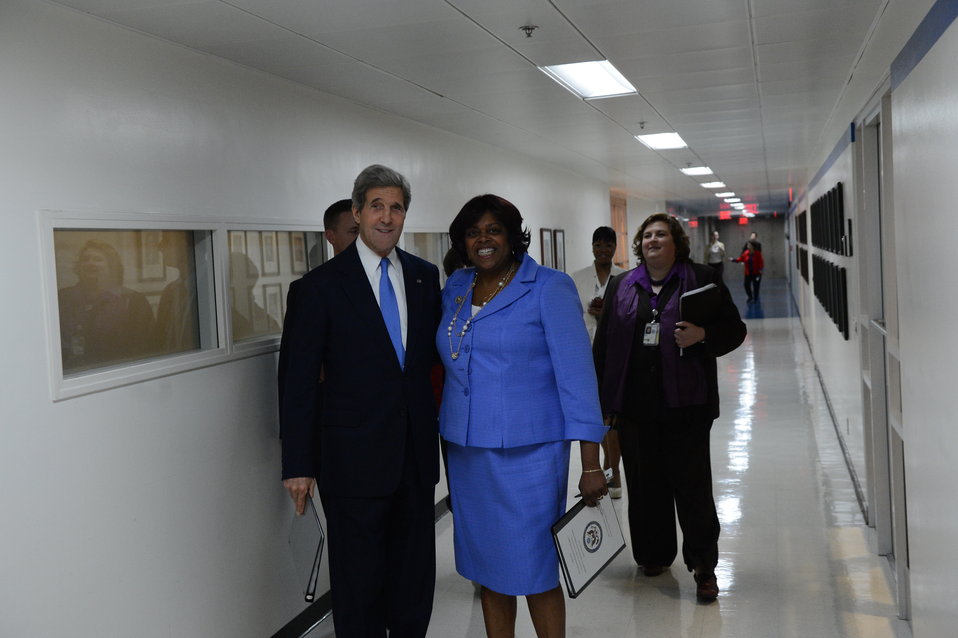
Secretary Kerry and Ambassador Johnson Cook Smile for a Photo

U.S. Secretary of State John Kerry and Ambassador-at-Large for International Religious Freedom Suzan Johnson Cook smile for a photo before releasing the 2012 International Religious Freedom Report at the U.S. Department of State in Washington, D.C., on May 20, 2013.